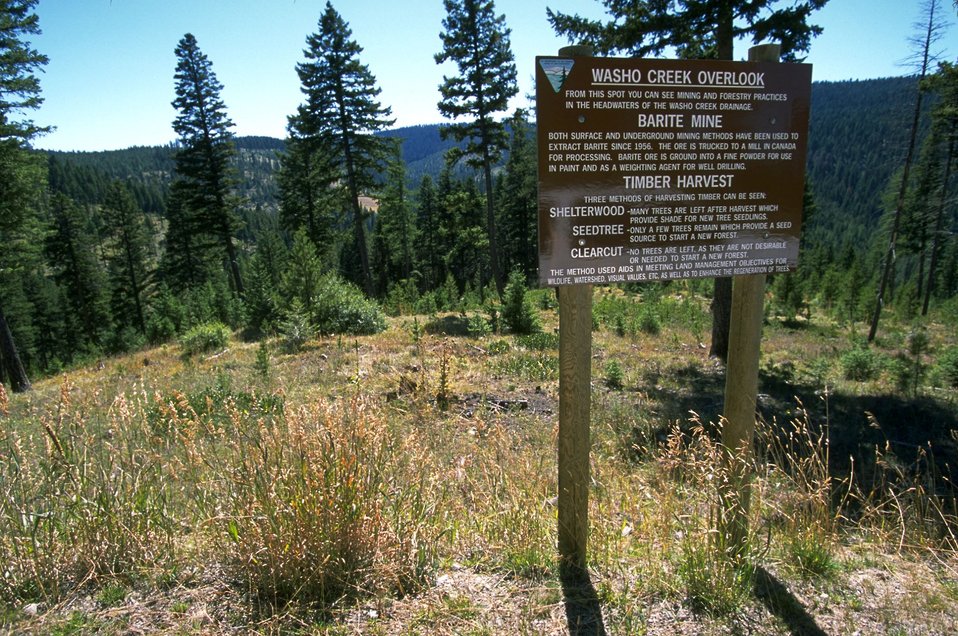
Garnet Back Country Byway--reclaimed barite mine along byway with interpretive sign